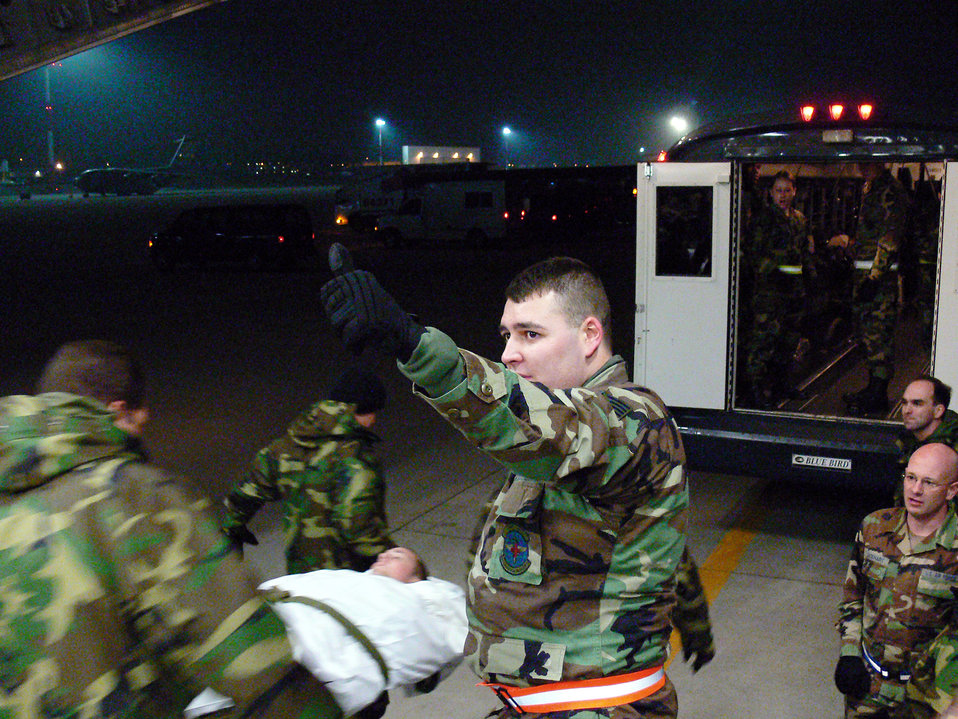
Former Air Force medic competes in Warrior Games

Staff Sergeant Ricky Tackett overseas the loading of a wounded Marine onto a bus destined to Landstuhl Regional Medical Center. The eleven wounded troops arrived onboard a C-17 following a helicopter crash in Southeast Afghanistan only hours earlier. SSgt Talbert is medical technician in the 435th Aeromedical Staging Flight from Ramstein Air Base, Germany.